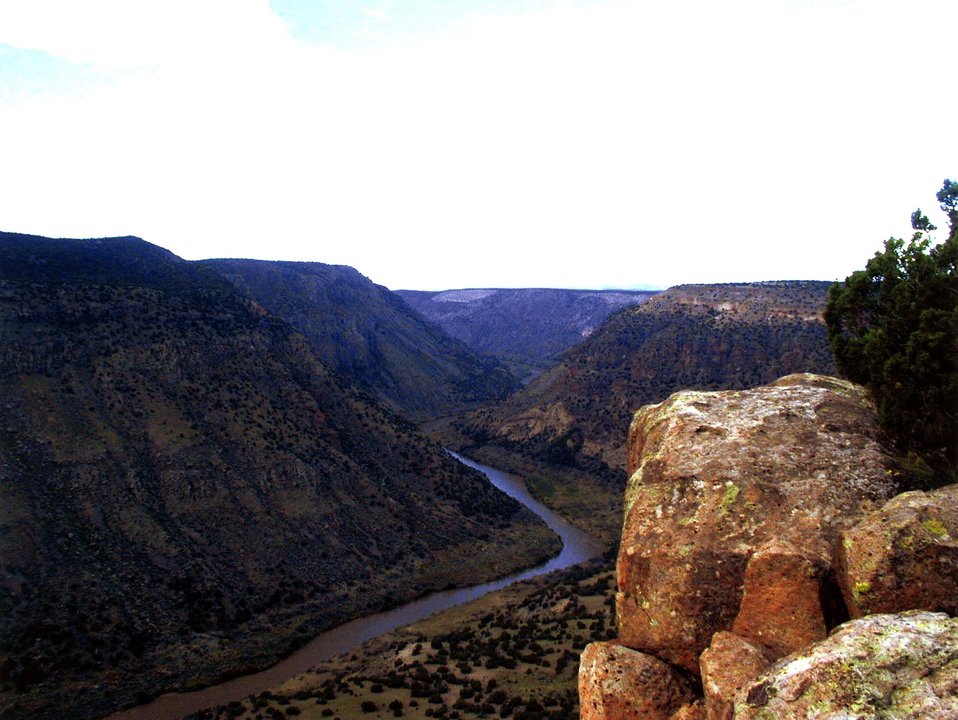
ROCK FORMATION IN FOREGROUND OF MOUNTAINS RANGE NEAR LOS ALAMOS NATIONAL LABORATORY.